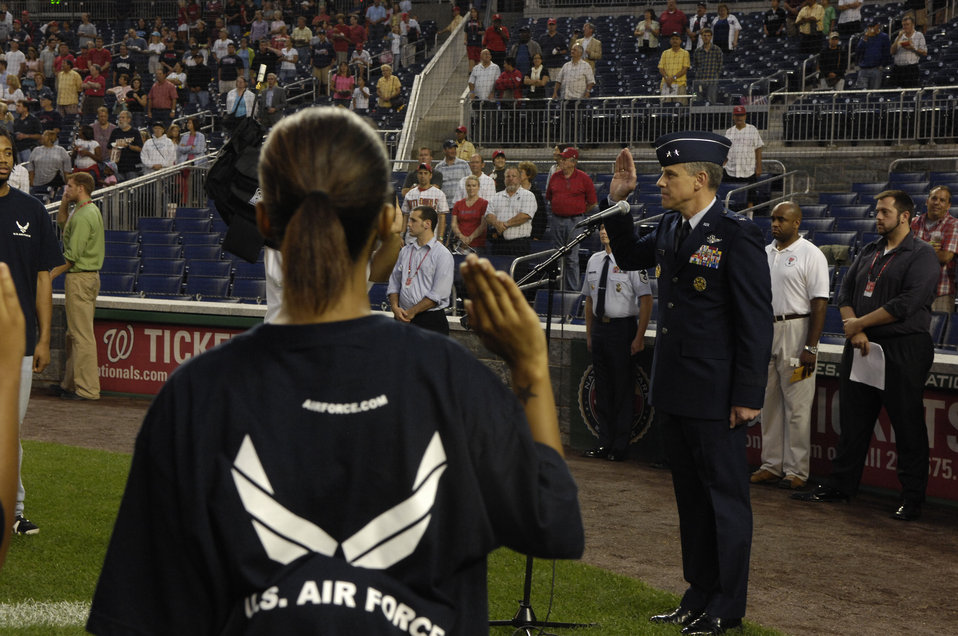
Air Force participates in major league game

Maj. Gen. William Chambers, director of communication for the office of the secretary of the Air Force, administers the oath of enlistment to Air Force recruits during the Washington Nationals Air Force Appreciation Night held Aug. 29 at Nationals Park in Washington, D.C. This was the first time the Washington Nationals Major League Baseball team held an event honoring the Air Force at the new park.